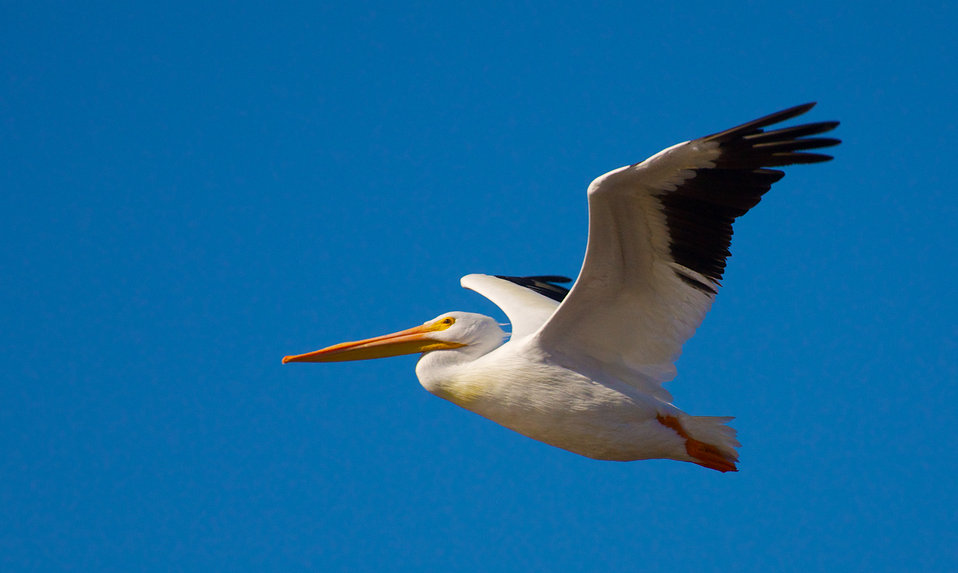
Adult American white pelican in flight

White pelican at Sonny Bono NWR.